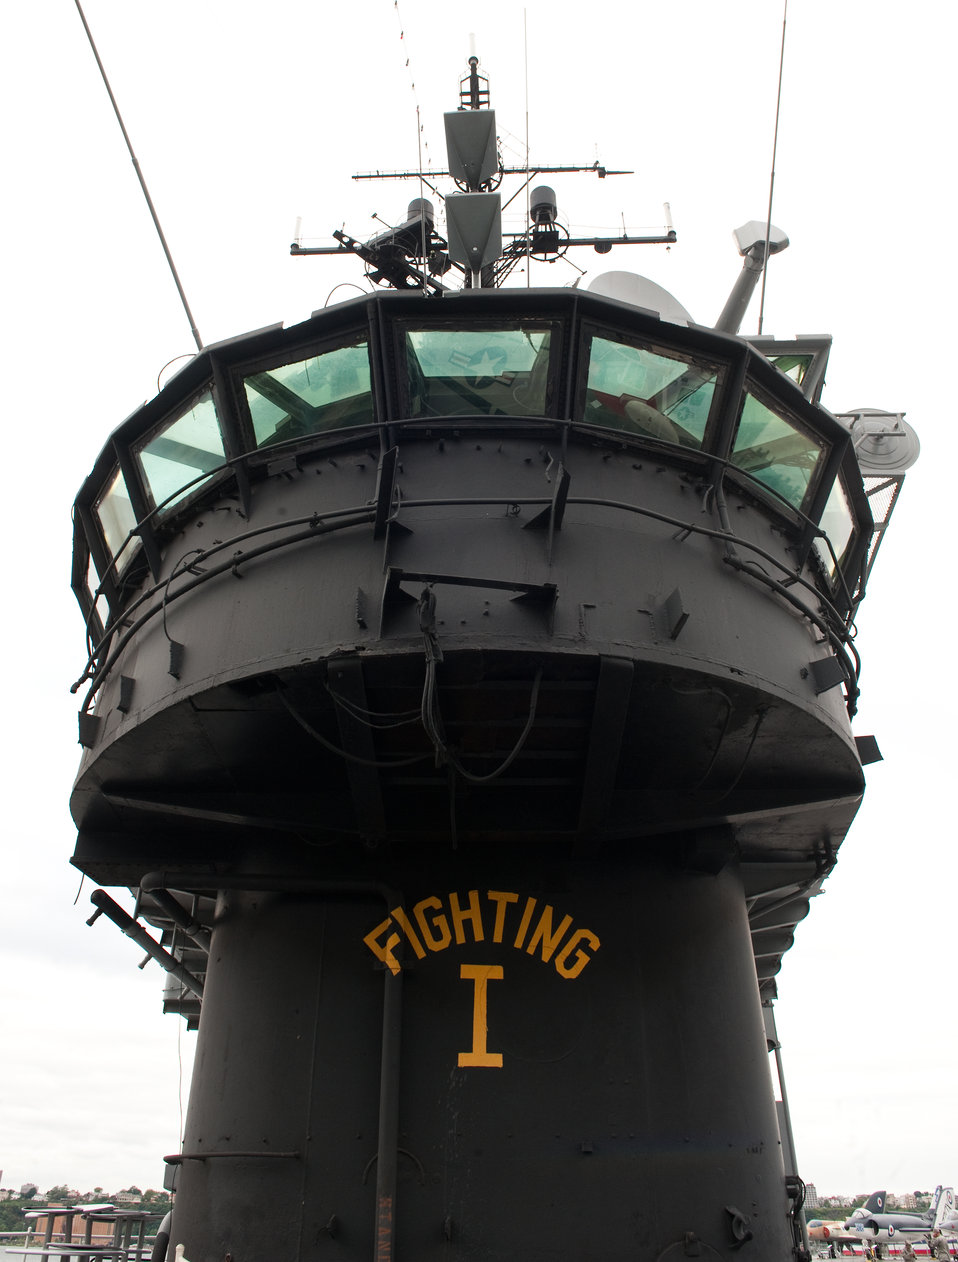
Air Force Week New York City Proclamation Ceremony

View of the front section of the superstructure of the USS Intrepid during the Air Force Week New York City proclamation ceremony on Aug. 24, 2010. The event at the Intrepid Sea, Air & Space Museum was highlighted by a six-ship flyover by the USAF Thunderbirds. The Honorable Michael Donley, Secretary of the Air Force attended, along with General Raymond Johns, Commander of Air Mobility Command. The Police Commissioner of the City of New York, the Honorable Raymond Kelly, represented NYC. Mr. Greg Kelly of